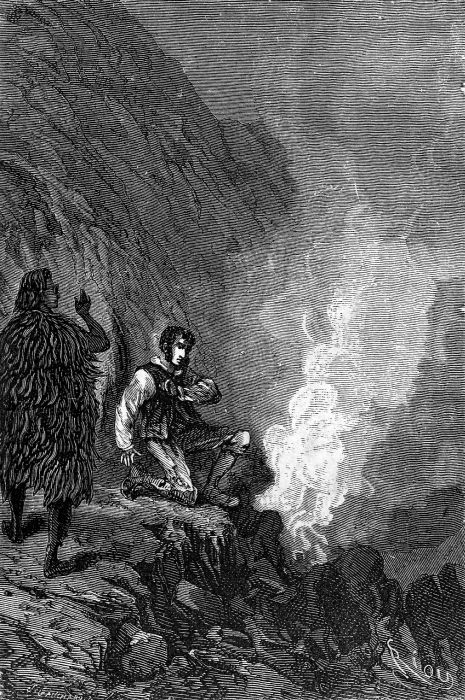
An ilustration from the novel 'In Search of the Castaways; or Captain Grant's Children' by Jules Verne drawn by Édouard Riou. Polski: Ilustracja powieści Juliusza Verne'a 'Dzieci kapitana Granta' autorstwa Édouarda Riou. Français : 'Les Enfants du capitaine Grant', Édouard Riou. Français : Le steward tomba à la renverse.